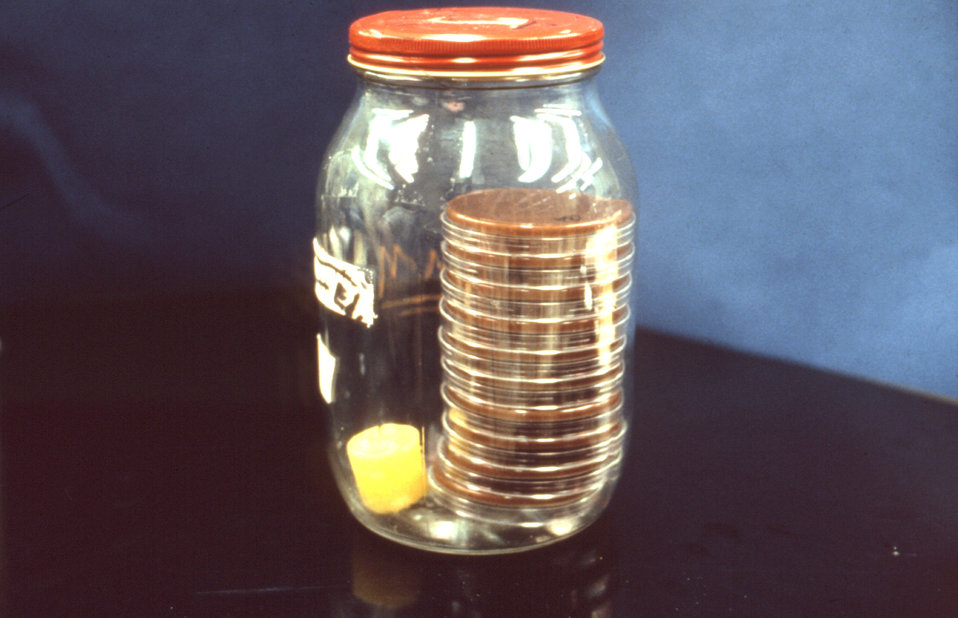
This candle jar contains specimens to be analyzed having been grown in a CO2 enriched atmosphere.